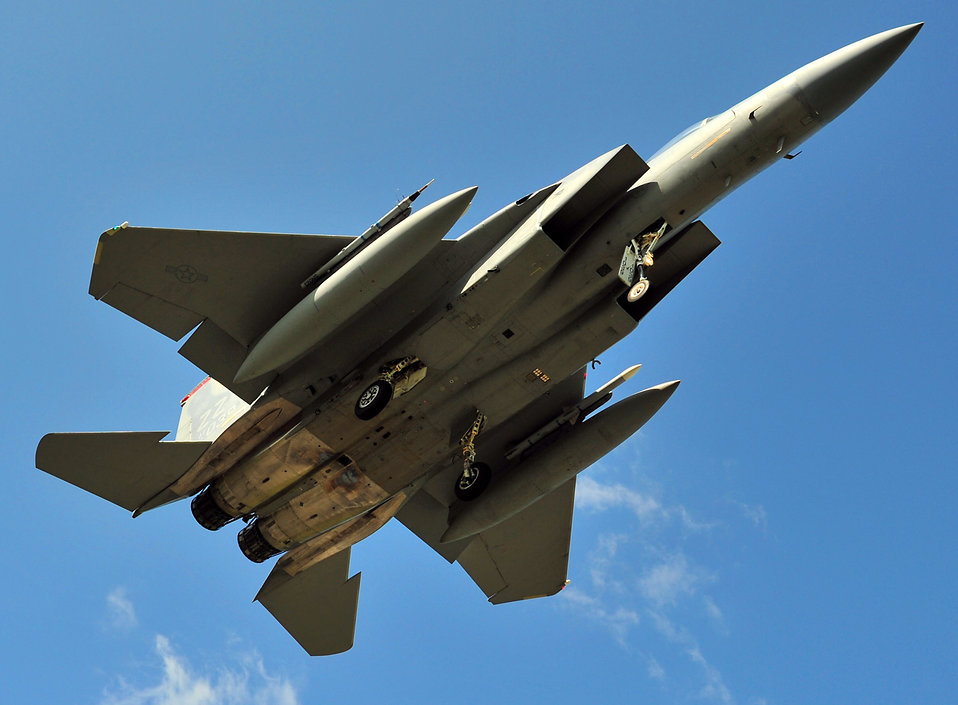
Joint Bilateral Training

An F-15C Eagle prepares to land Feb. 23, 2010, at Kadena Air Base, Japan. Kadena Airmen were participating in joint bilateral training with other U.S. forces and the Japan Air Self Defense Force from Feb. 22 to 26.